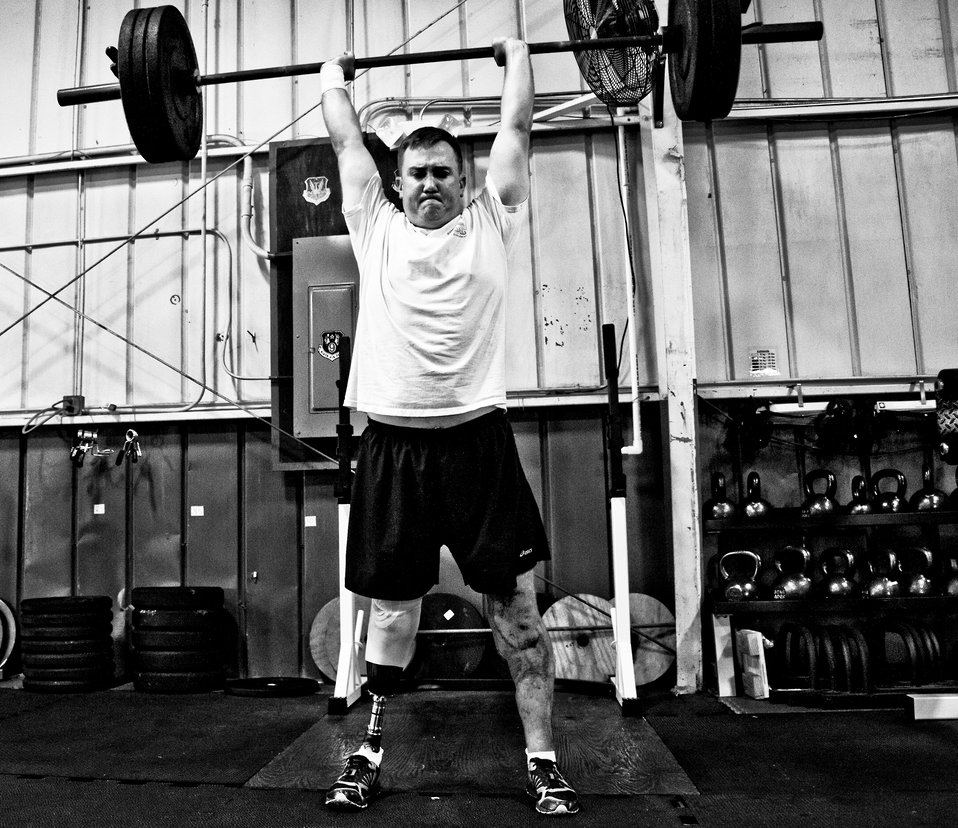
SSgt David Flowers

Staff Sgt. David Flowers adds weighted squats into his workout routine June 28, 2011, at Eglin Air Force Base, Fla. The explosive ordnance technician was officially returned to duty in June after he lost his right leg and incurred major damage to his left leg in a land mine explosion in Afghanistan in 2009. In August, he is scheduled to begin training to be an EOD instructor at the Navy EOD School. Flowers is assigned to 366th Training Squadron, Det. 3.